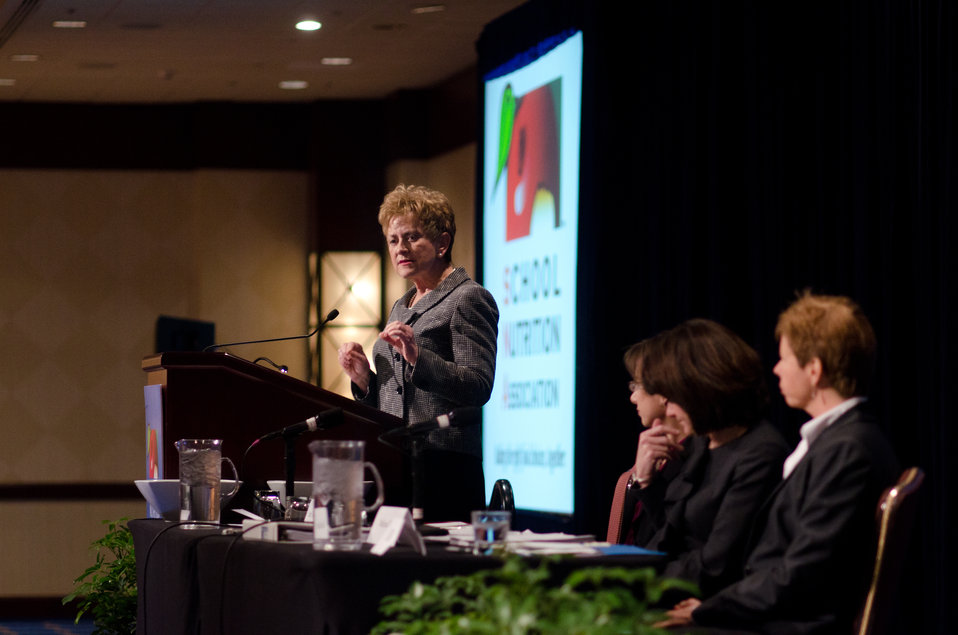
Agriculture Deputy Under Secretary for Food, Nutrition and Consumer Services Dr. Janey Thornton responded to questions during the School Nutrition Association’s closing general session of their 39th annual Legislative Action Conference at the J.W. Marriott Hotel in Washington, D.C., on Wednesday, March 9, 2011.